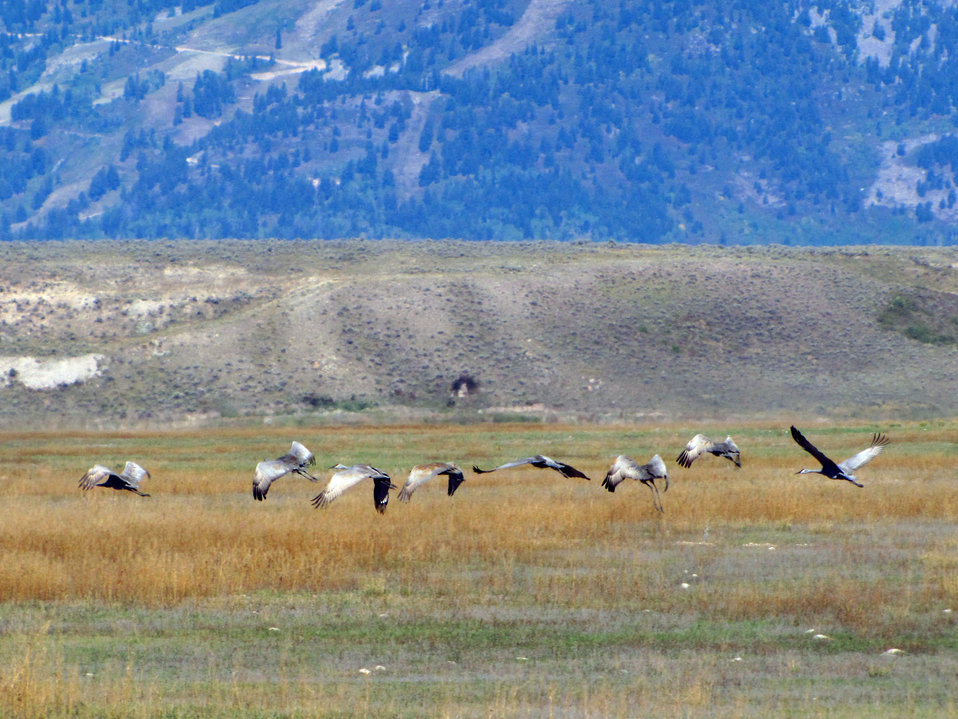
Fall migration

During the week of September 9, 2013, National Elk Refuge Biologist Eric Cole and two volunteers counted nearly 280 sandhill cranes on the Refuge, a high number compared to other years.